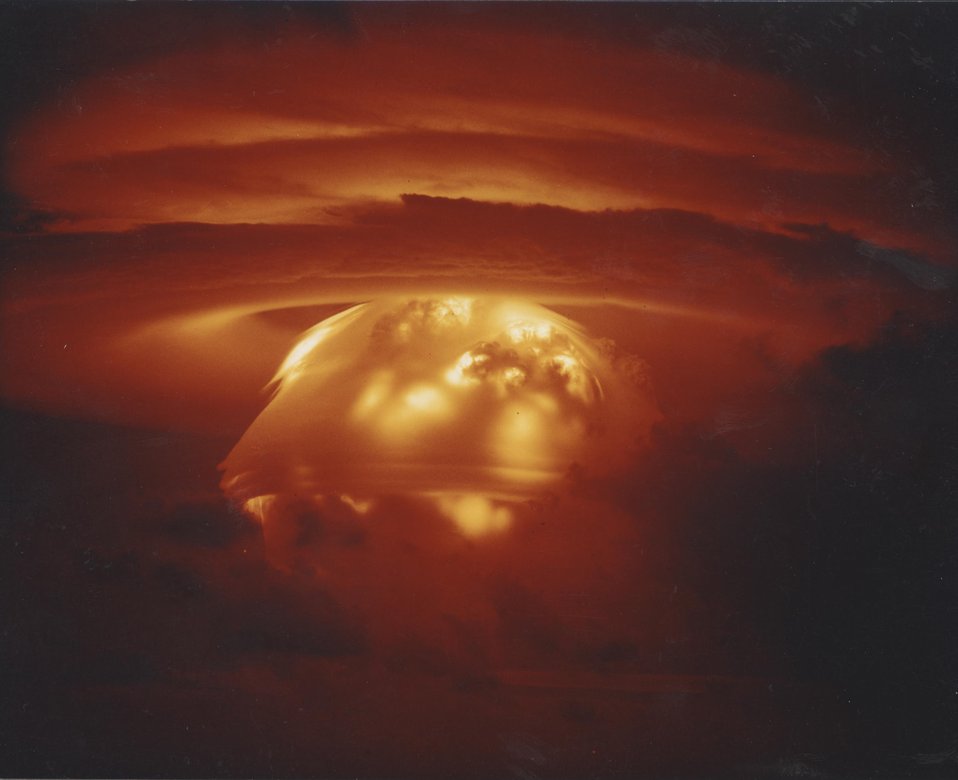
OPERATION CASTLE BRAVO- FIRST THERMAL SHOT. (NOV 1, 1954)